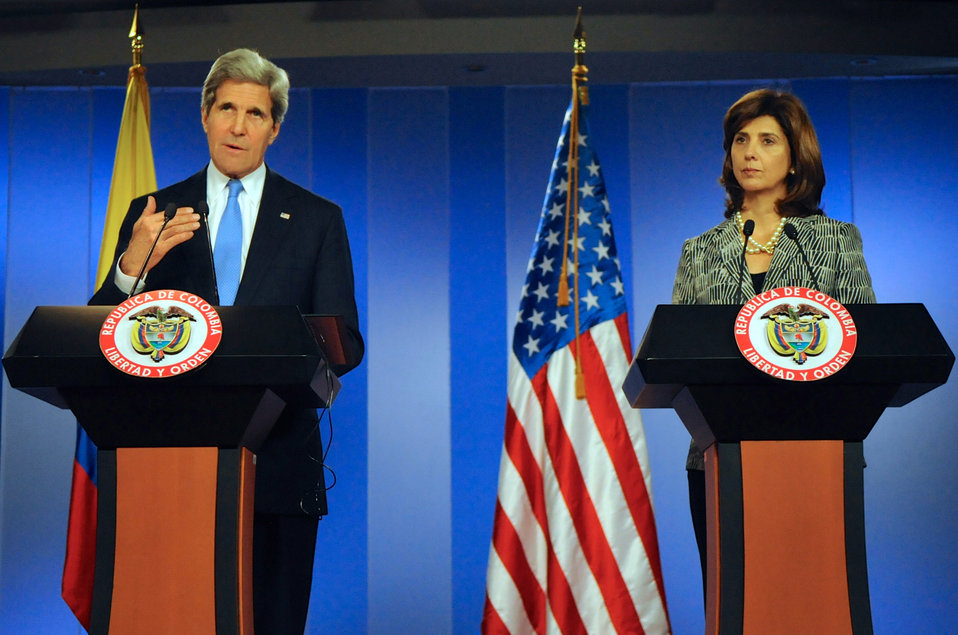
Secretary Kerry and Colombian Foreign Minister Holguin Address Reporters

U.S. Secretary of State John Kerry and Colombian Foreign Minister Maria Angela Holguin address reporters in Bogota, Colombia, on August 12, 2013.